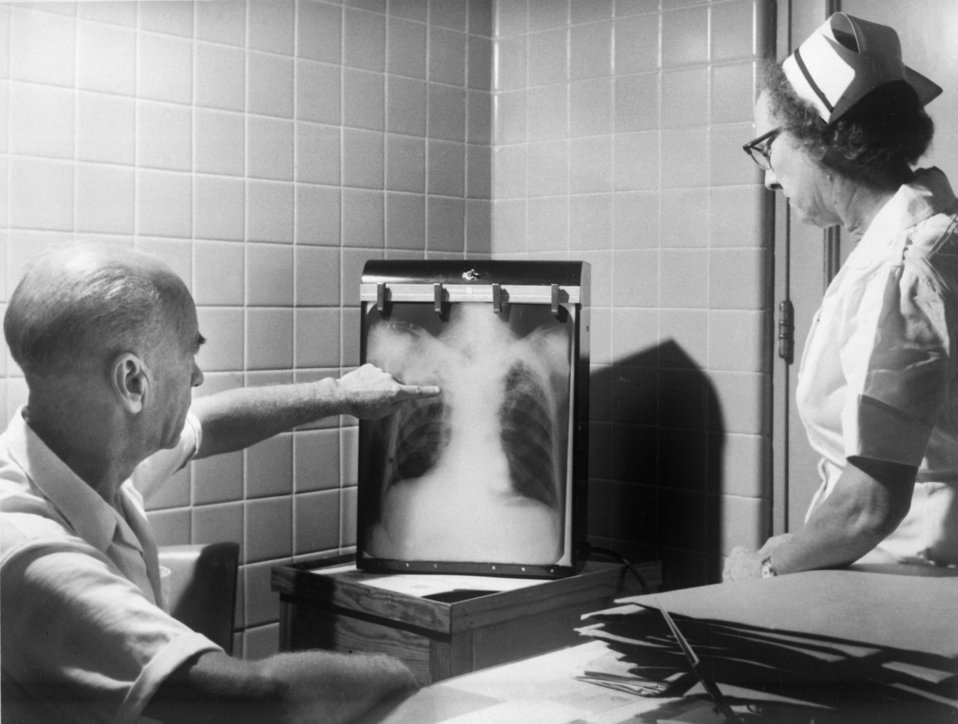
Here a physician and nurse examine a tuberculosis positive chest x-ray.